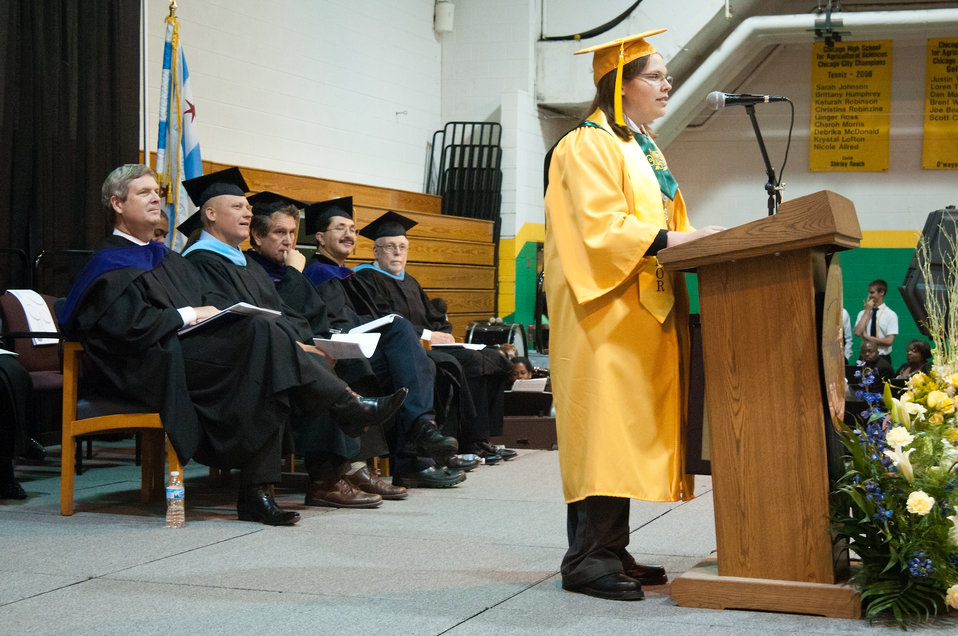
Agriculture Secretary Tom Vilsack listens to Valedictorian Stephanie Markham deliver her address to the 2012 graduating class at the Chicago High School for Agricultural Sciences in Chicago, Illinois on Friday, June 8, 2012. Secretary Vilsack gave the commencement address. During his speech Secretary Vilsack discussed innovation in the food and agricultural industries and the importance of the American agriculture sector in expanding economic opportunity and creating jobs in communities throughout the country.